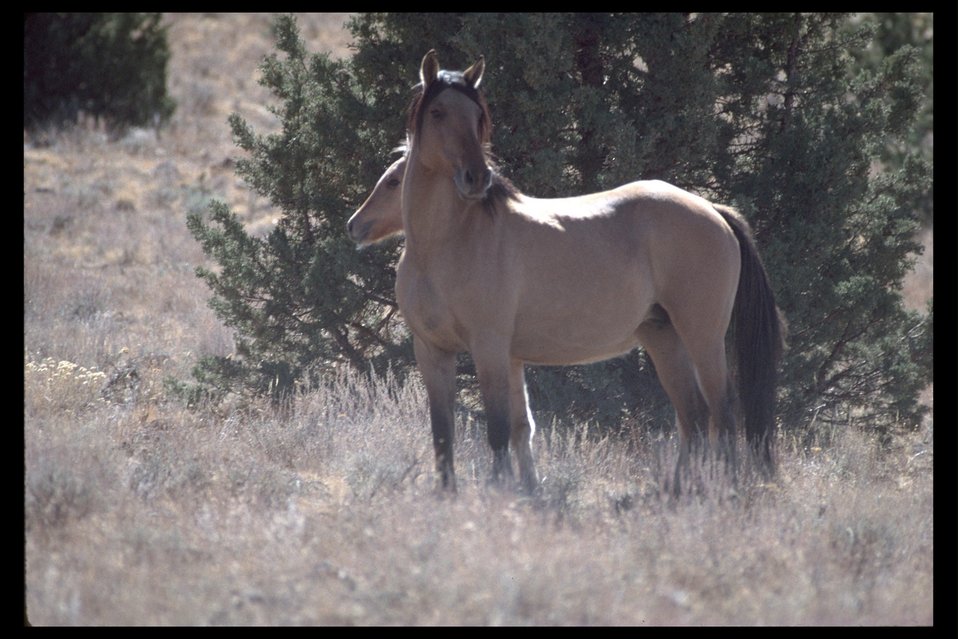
Kiger mustang on Kiger HMA.